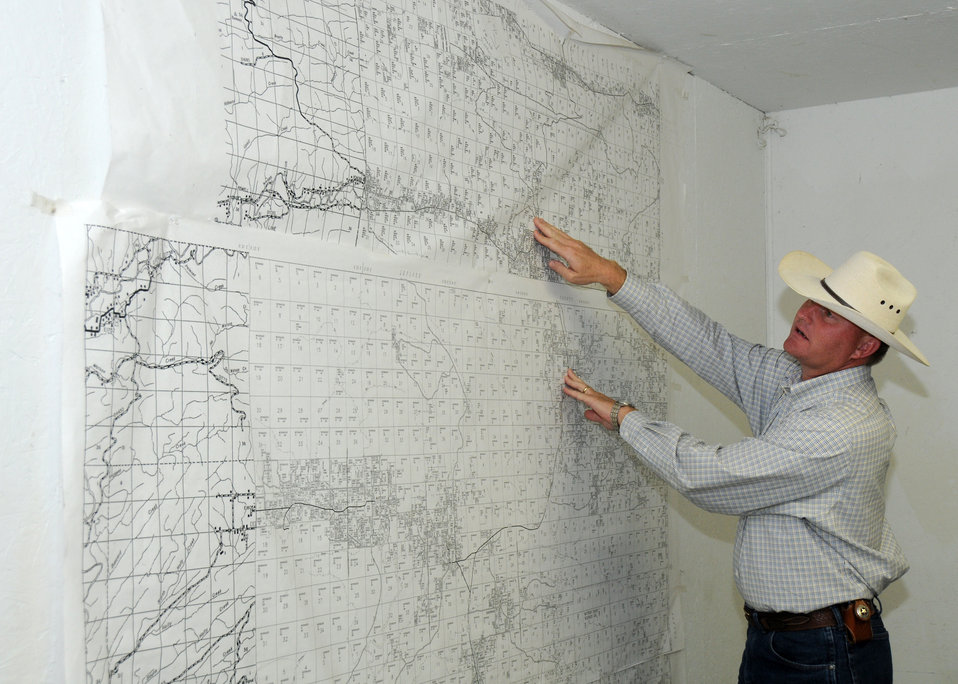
Water District #6 employee explains the desparate need for water for McCurtain County, Oklahoma. American Recovery and Reinvestment (ARRA) funds ($11,299,300.00) have been given to build a water line and water tower for the people of Smithville, McCurtain County, OK.